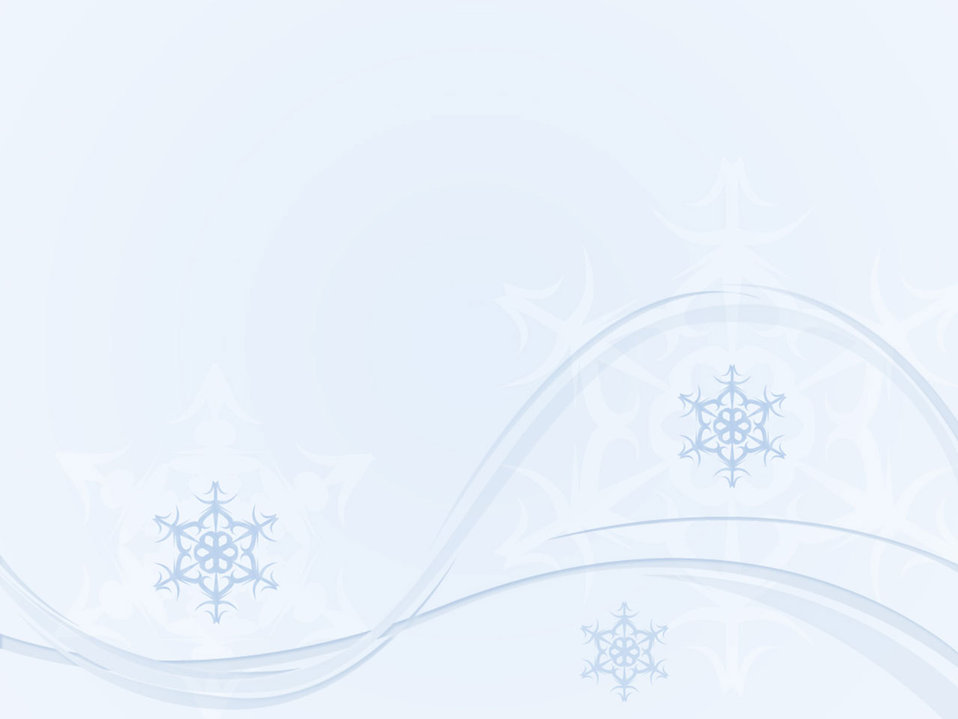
Blue winter

Light colored winter themed background..